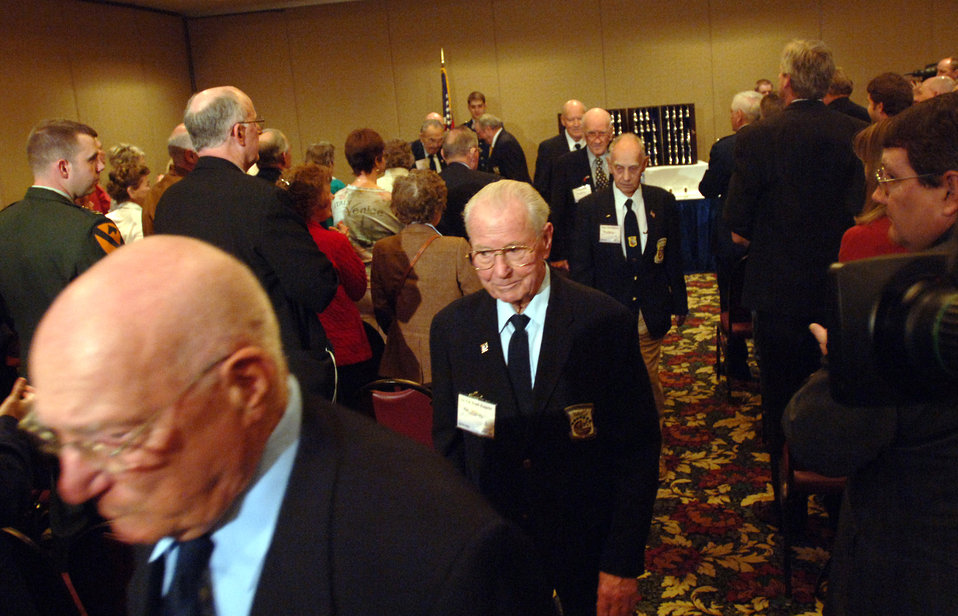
Doolittle Raiders celebrate 64th reunion

Retired Lt. Col. Frank Kappeler (center) and seven other of the 16 remaining Doolittle Raiders adjourn from their 64th reunion goblet ceremony with a standing ovation from friends, family and media in Dayton, Ohio, on Tuesday, April 18, 2006. The solemn goblet ceremony honors the Doolittle Raiders and the accomplishments of their April 18, 1942, Tokyo Raid.